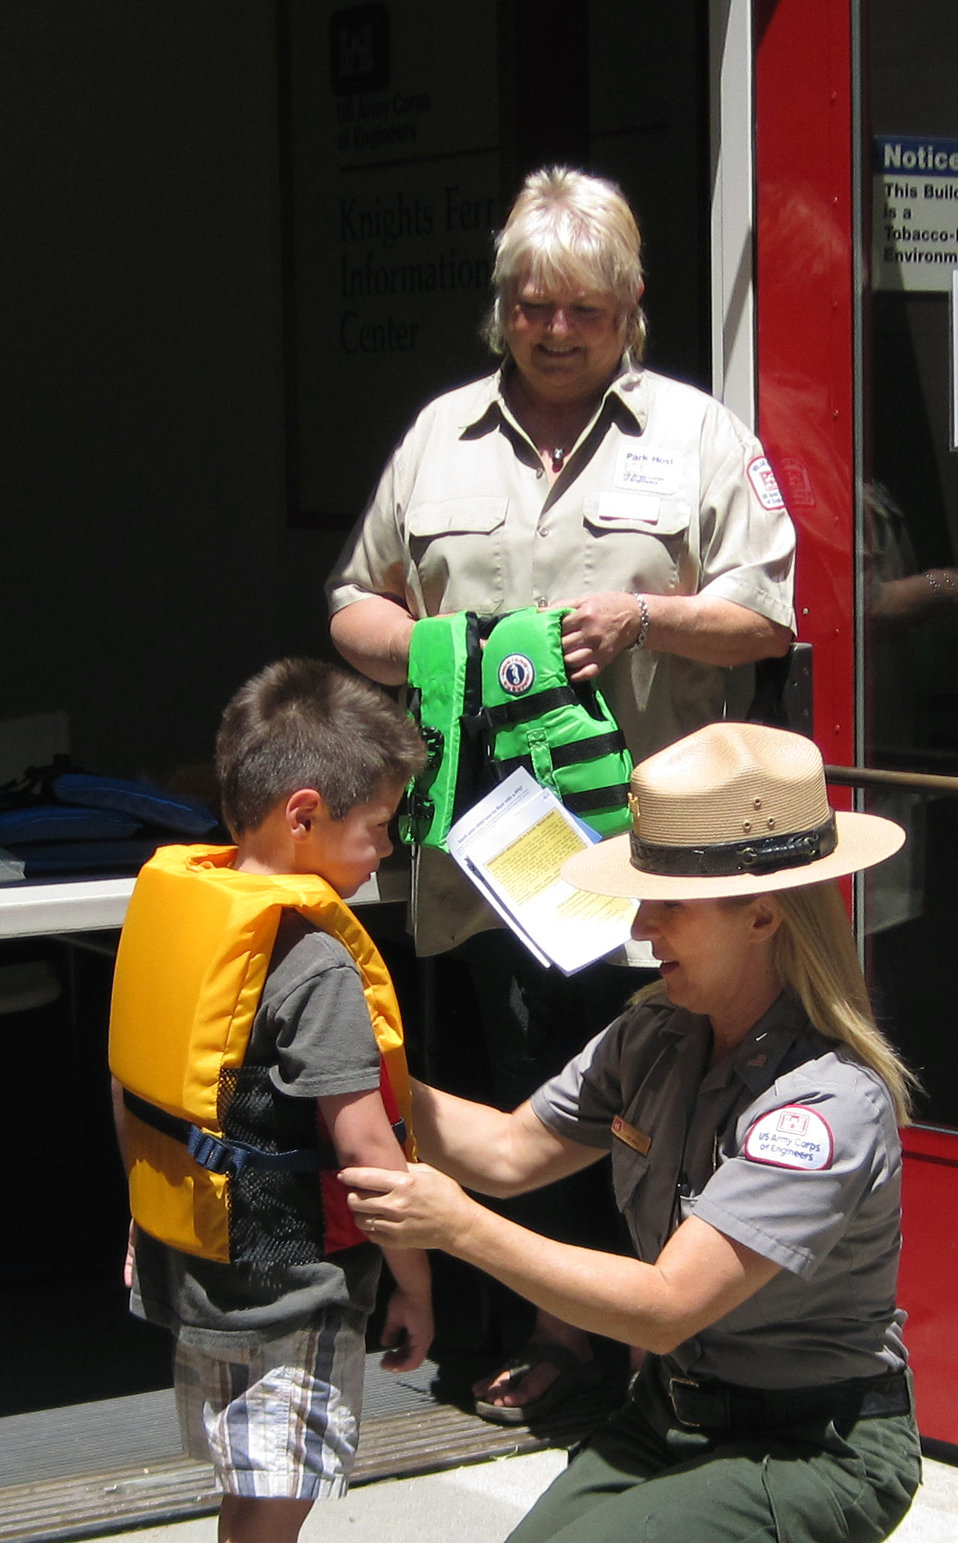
Life Jacket Trade-in Day 2013

Park host volunteer Susan Fehr, top, looks on as park ranger Heather Wright fits a young man with a brand new life jacket during Life Jacket Trade-in Day, May 24, 2013 at Stanislaus River Parks, the U.S. Army Corps of Engineers Sacramento District park at Knights Ferry, Calif. Sponsored by the California Department of Boating and Waterways, the exchange offered a new life jacket in return for any used life jacket.